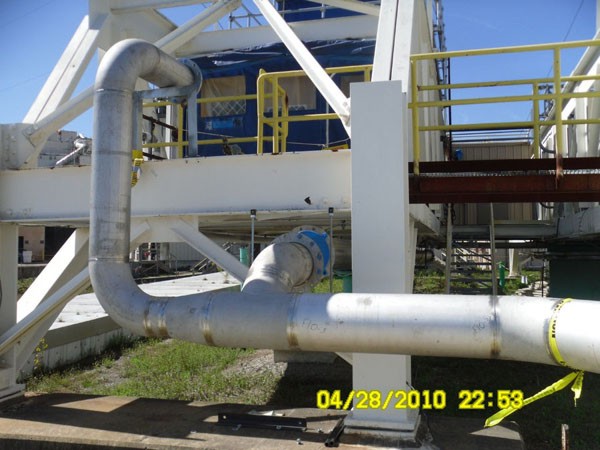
Recovery Act Funds New Equipment to Keep Waste Tanks Dry

With funding from the Recovery Act, workers at the West Valley Demonstration Project (WVDP) are installing a tank and vault drying system to evaporate the remaining liquids in the tanks and vaults, and maintain a low relative humidity to limit tank corrosion.

With an operational design life of 30 years, this system will provide needed time for WVDP officials to make and implement long-term decisions about the decommissioning of the Waste Tank Farm.